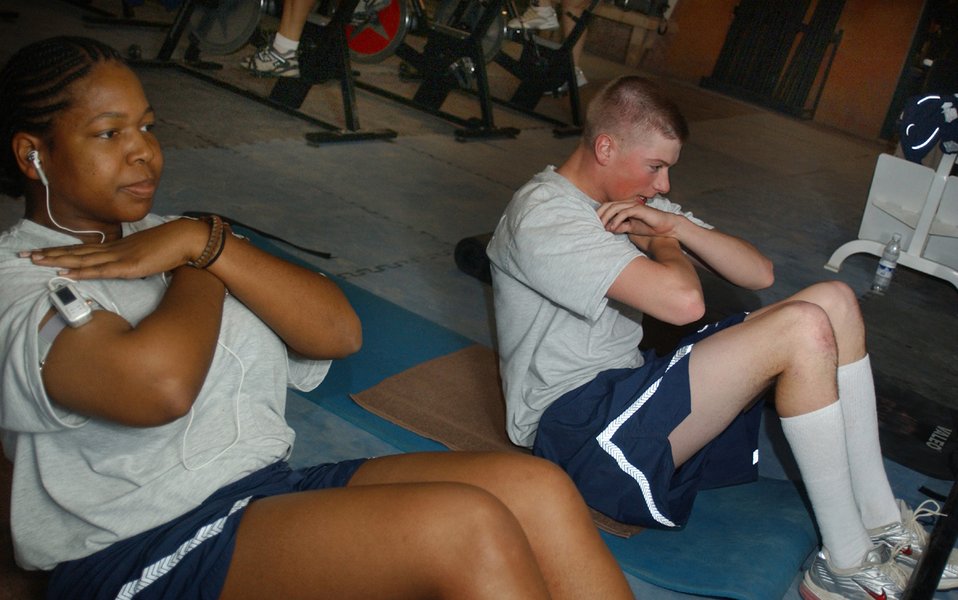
Working out

ALI BASE, Iraq (AFPN) -- Staff Sgt. Paula Spruill (left) and Airman 1st Class Andrew Warnamant exercise in preparation for their physical fitness test. Sergeant Spruill is an equipment management liaison craftsman assigned to the 407th Expeditionary Logistics Squadron. Airman Warnamant is an engineering assistant journeyman with the 732nd Expeditionary Civil Engineer Squadron.